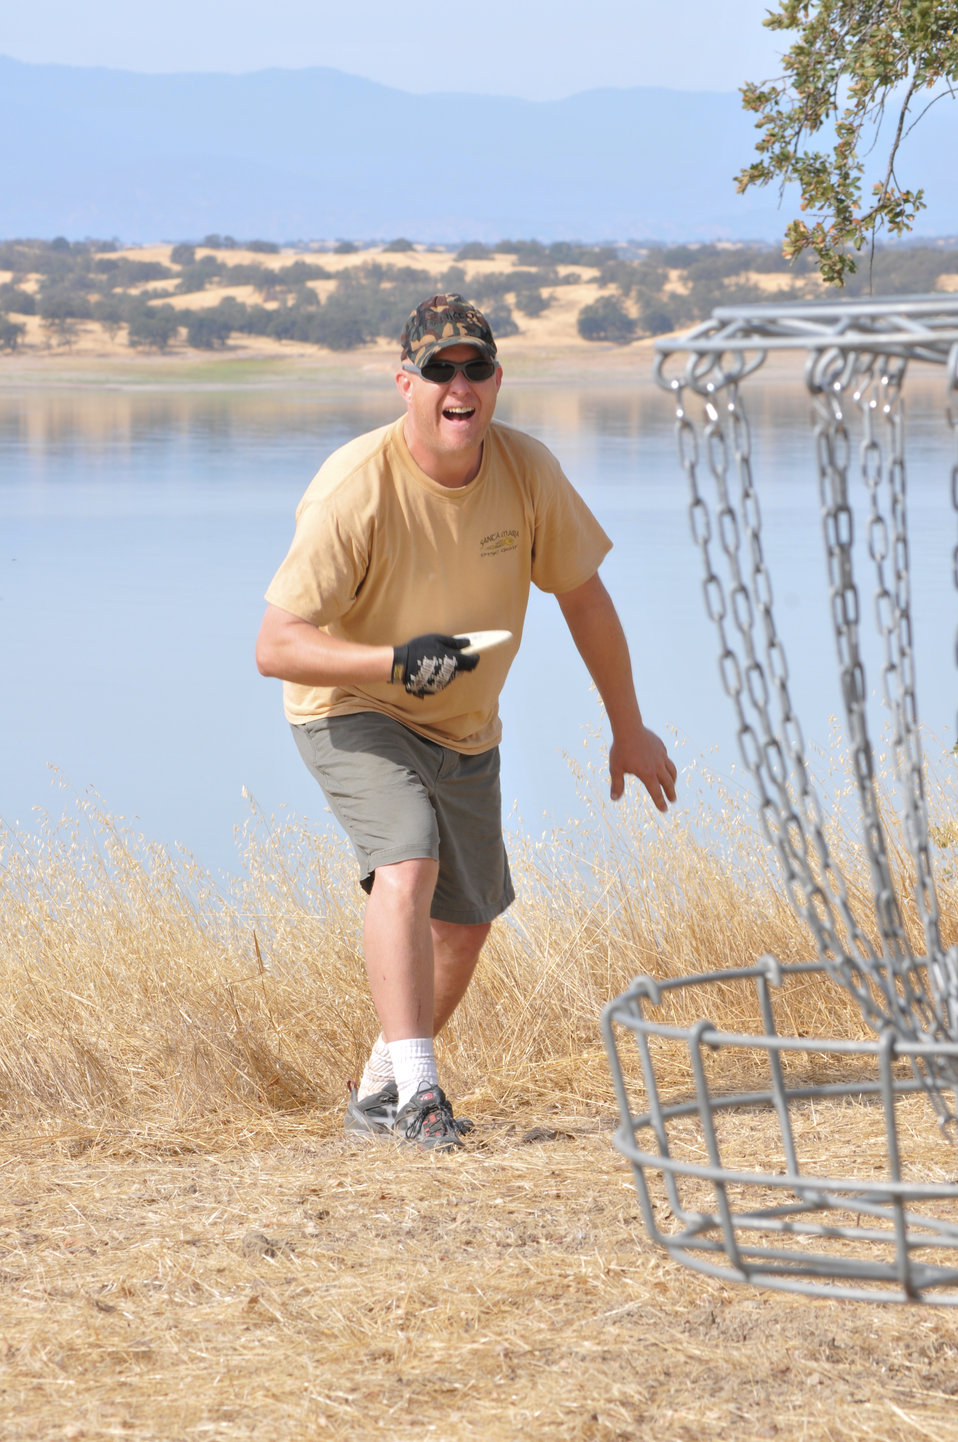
BLACK BUTTE LAKE, Calif. (Oct. 18, 2010) -- A disc golfer putts during the Professional Disc Golf Association's Norcal Series Championships here Oct. 16. The U.S. Army Corps of Engineers Sacramento District’s Black Butte hosted the tournament Oct. 15-17 at its new disc golf course, built on park lands by The Orland Aces disc golf club under a partnership with the Corps. More than 150 disc golfers from as far as Texas competed in the tournament.